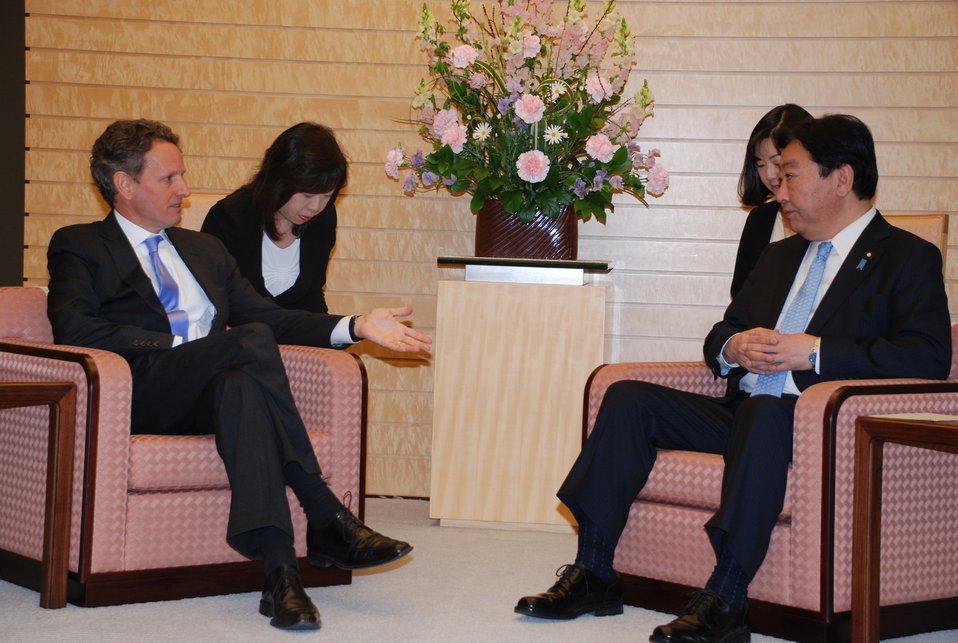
Secretary Geithner in Japan

On Thursday, January 12, 2012, Treasury Secretary Tim Geithner met with Japanese Prime Minister Yoshihiko Noda.